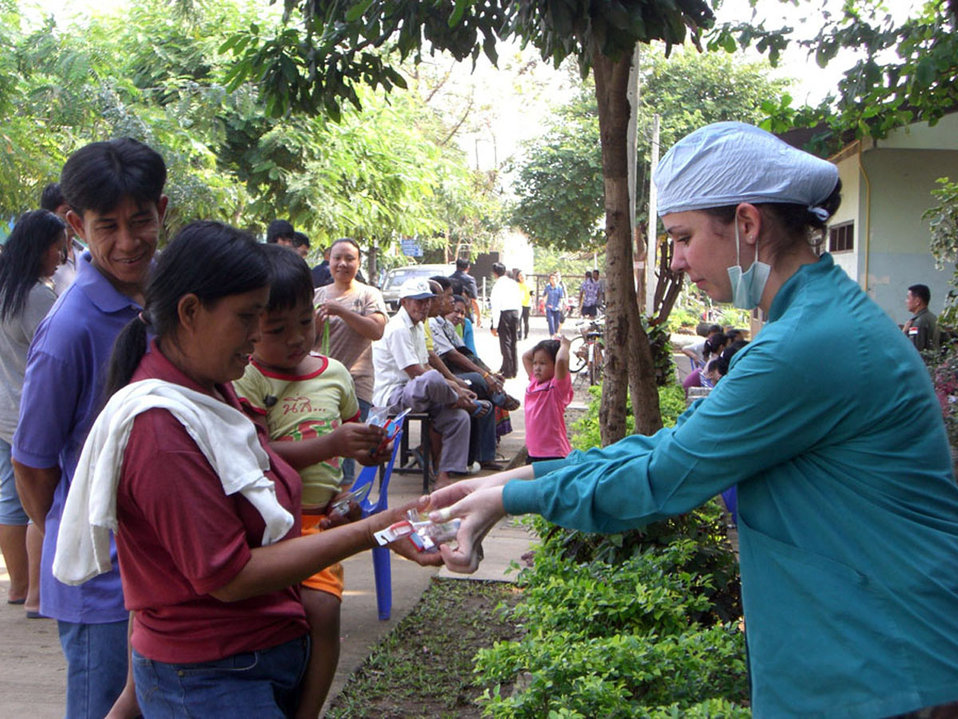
PACAF team donates to Thai school

Senior Airman Grace Peon gives a Thai family a toothbrushing kit at Ban Don Phawa School Jan. 30 in a rural village outside of Korat, Thailand. Airman Peon, a dental technician from the 18th Dental Squadron in Kadena Air Base, Japan, is part of a Pacific Air Forces medical team that provided medical and dental care to local residents of the rural village outside of Korat.